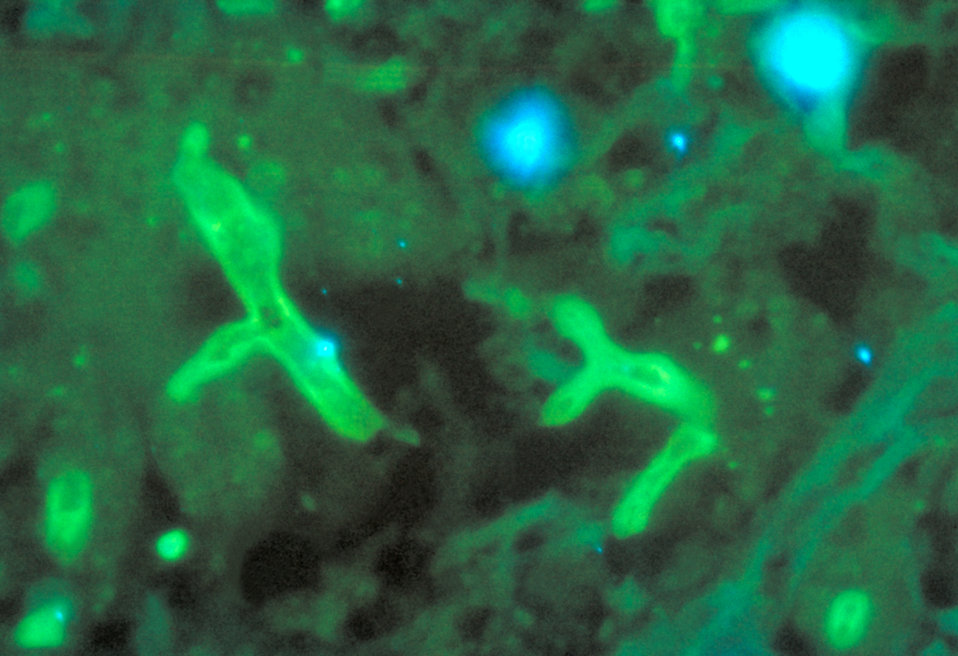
This slide reveals some of the histopathologic changes seen in zygomycosis due to Rhizopus arrhizus using FA stain technique.